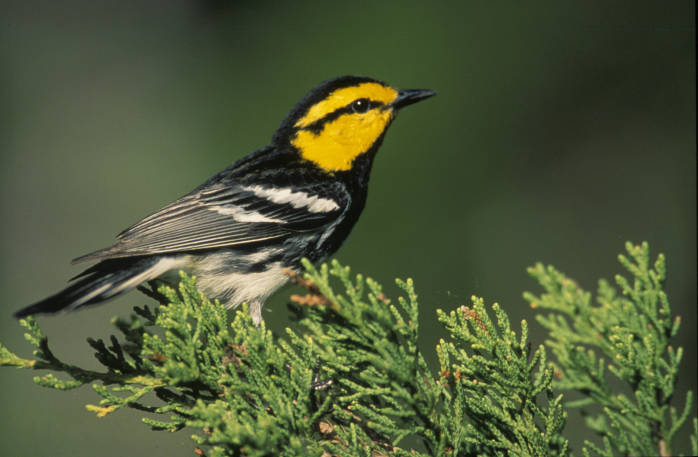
Golden cheeked warbler

Scientific name: Dendroica chrysoparia
Status: Endangered